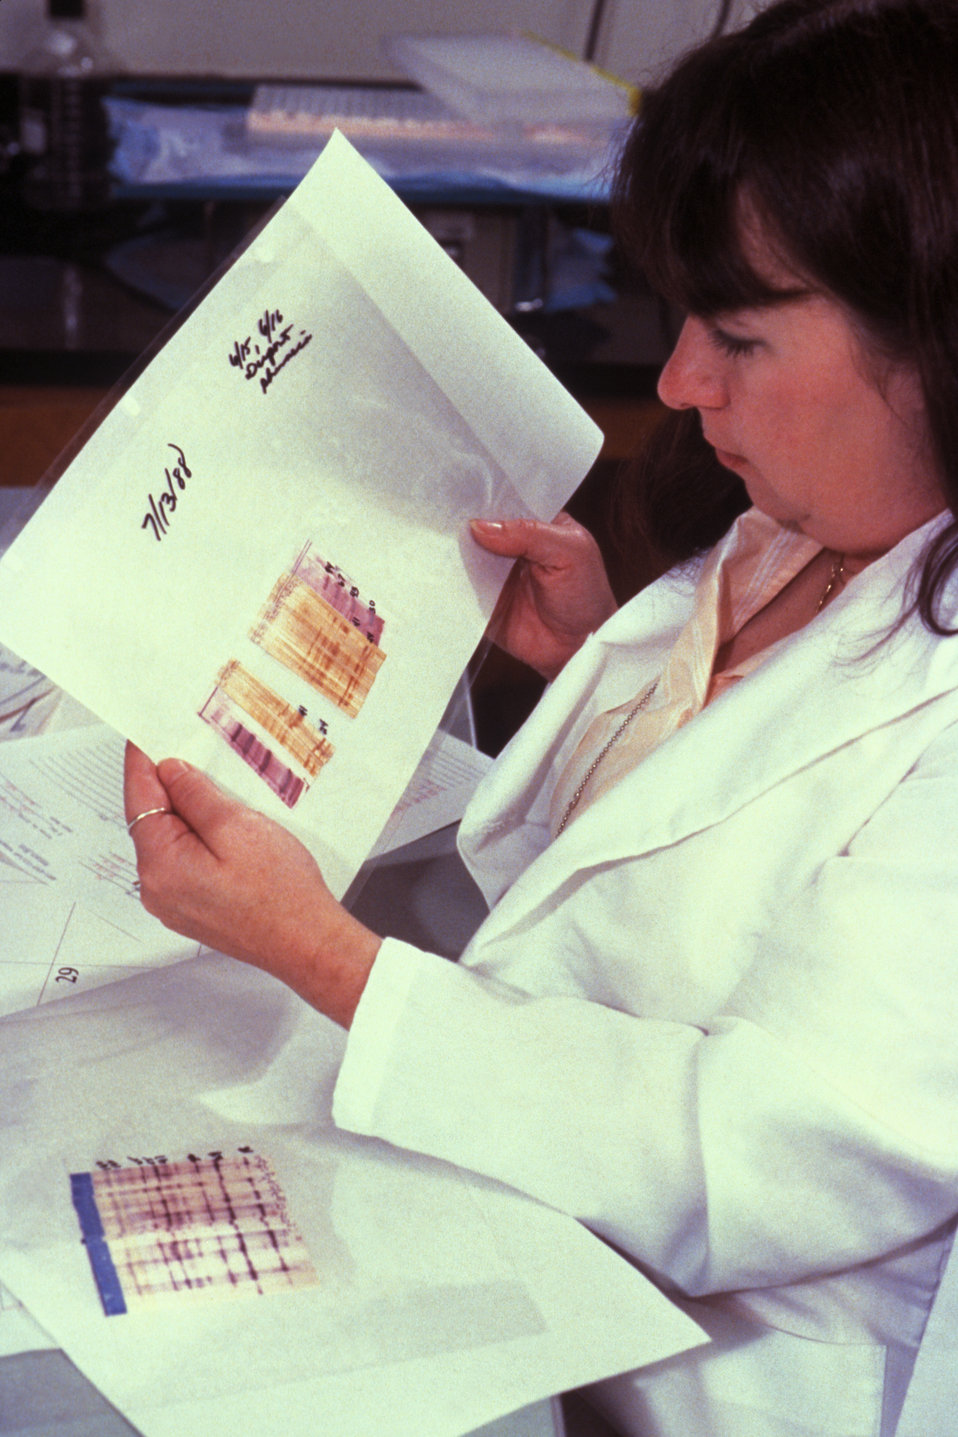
This CDC lab technician is carrying out AIDS research during 1988 laboratory studies.